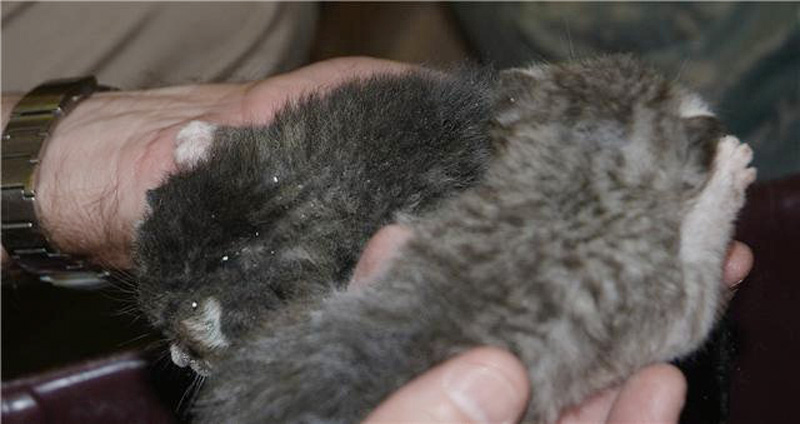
Airmen rescue kittens inside wall

Master Sgt. Mark Young holds two days-old kittens he rescued June 22 from inside a wall in a building at Hurlburt Field, Fla. Members of the 505th Command and Control Wing cared for the litter of four until they were turned over June 23 to a wildlife refuge until they can be adopted.